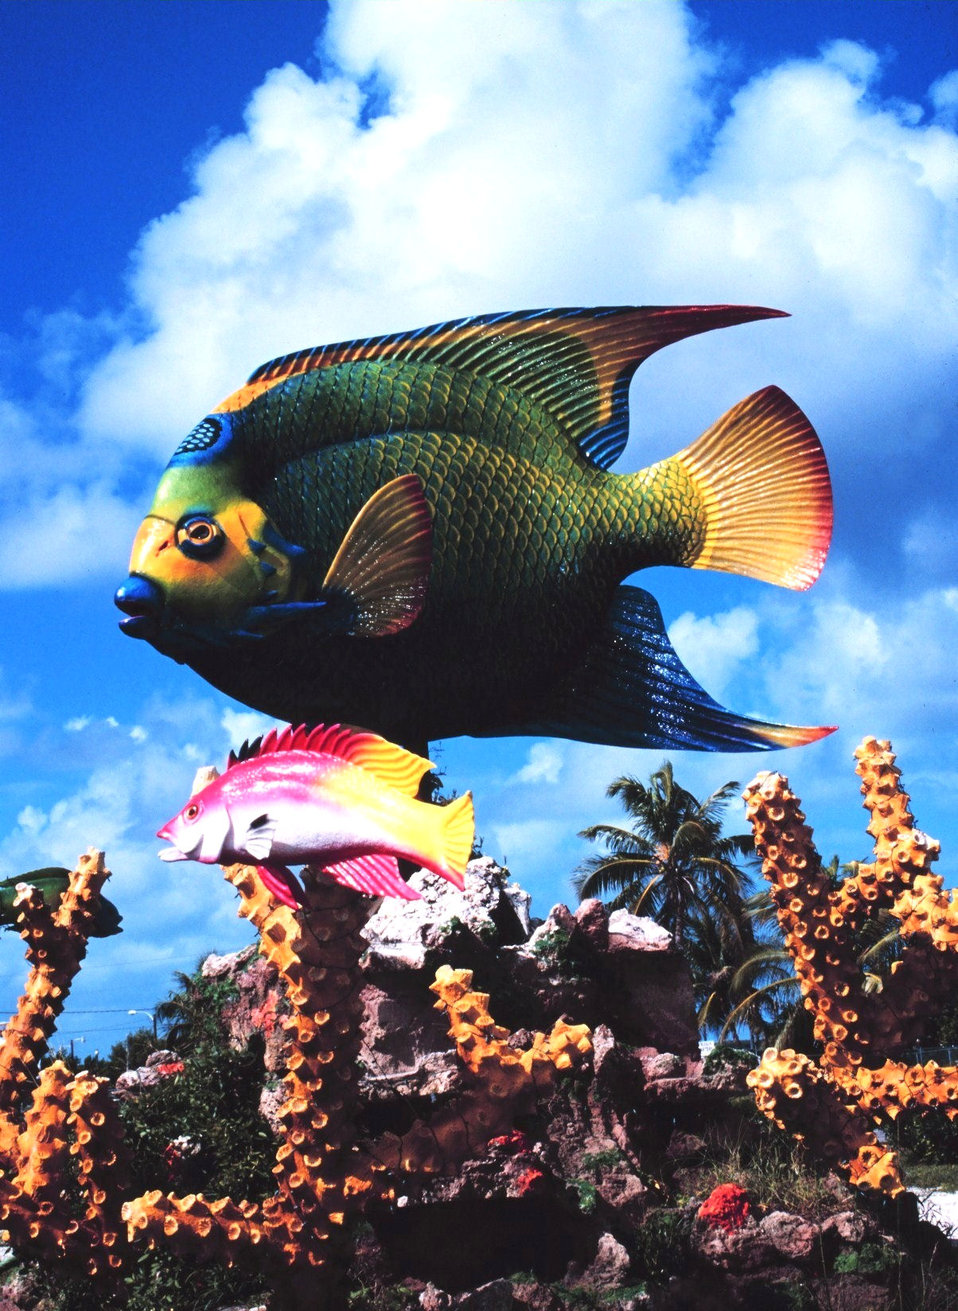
Fish art on the roadside